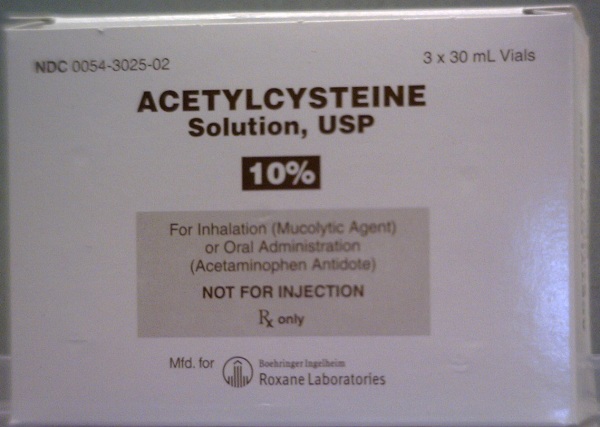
RECALLED - Acetylcysteine Solution 10%, USP

February 14, 2014 – Product Recall – Ben Venue Laboratories, Inc. Issues A Voluntary Nationwide Patient Level Recall Of Acetylcysteine Solution 10%, Usp, Lot 2005479.